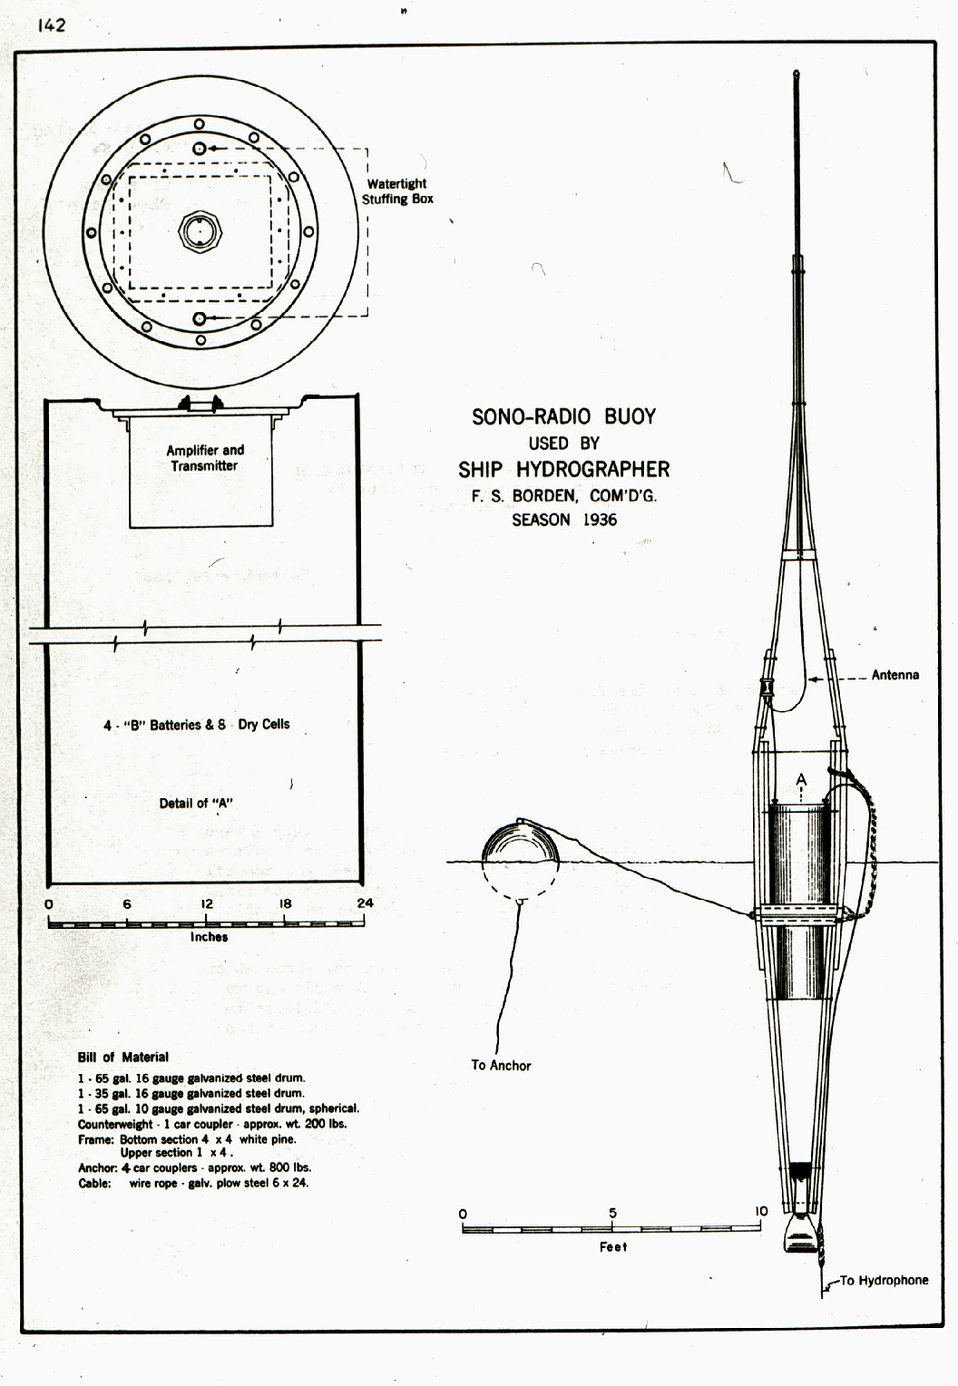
A sono-radio-buoy developed to eliminate need for station boats. RAR operations in the Gulf of Mexico. Forerunner of Anti-submarine warfare sonobuoys